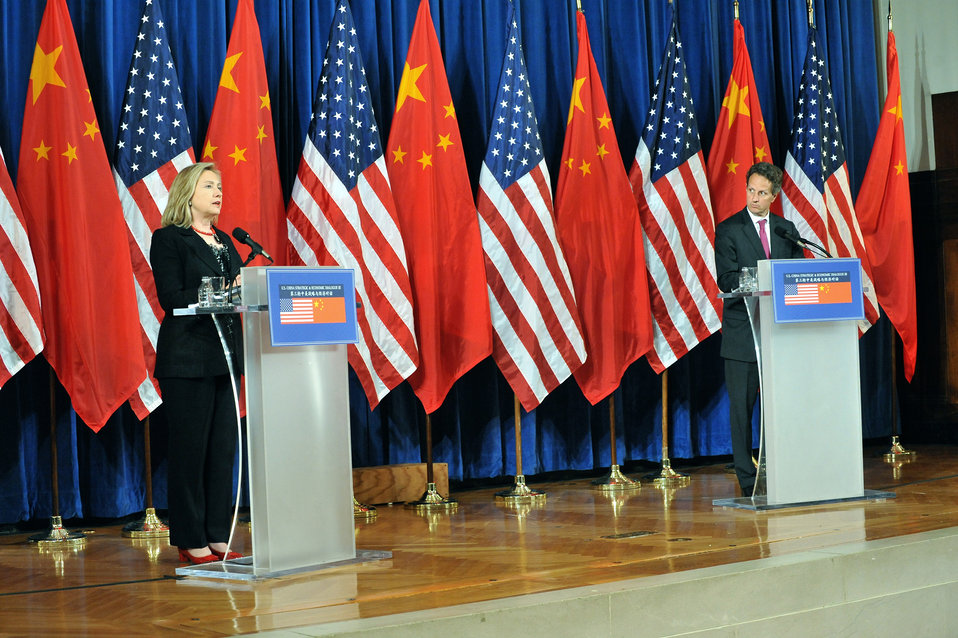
Secretaries Clinton and Geithner Hold a Joint Press Conference

U.S. Secretary of State Hillary Rodham Clinton and U.S. Secretary of the Treasury Timothy Geithner hold a joint press availability, in the U.S. Department of the Interior’s Sidney R. Yates Auditorium in Washington, D.C., on May 10, 2011.